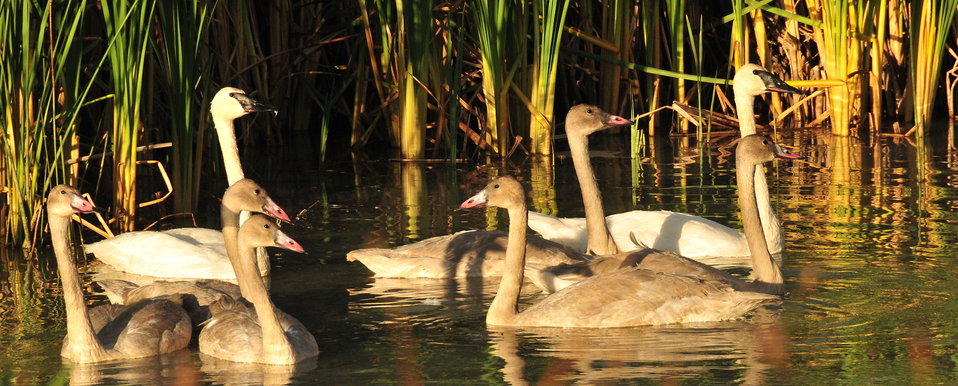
Trumpeter Swan pair and Cygnets on Seedskadee NWR

Seedskadee NWR has been part of the range expansion program for trumpeter swans in Wyoming for over 2 decades. Up to 7 pairs now successfully nest each year. The highly productive wetlands on Seedskadee NWR produce almost half of the swans that fledge in Wyoming each year.